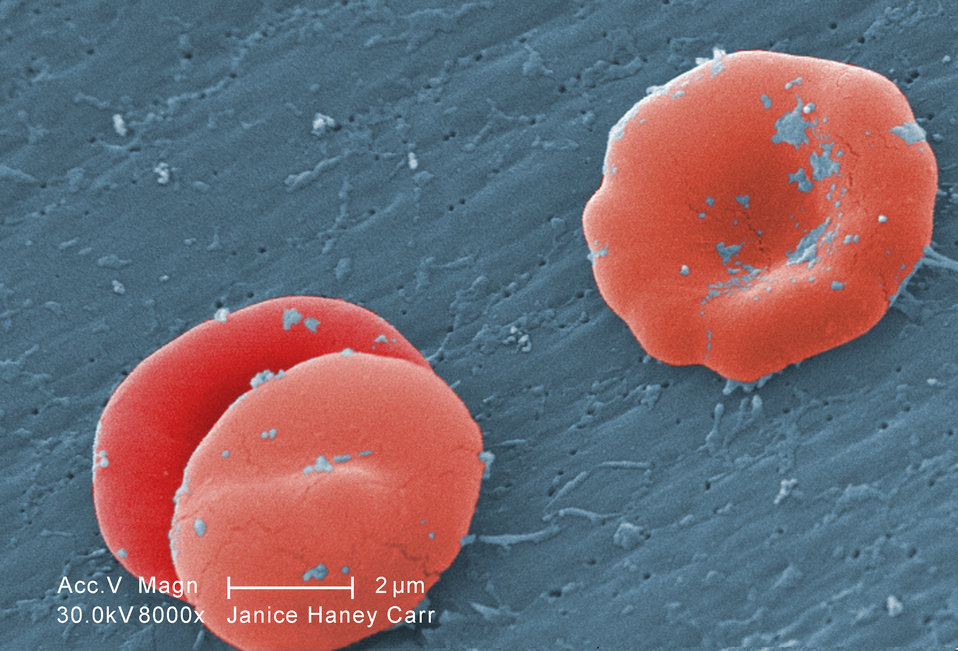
Under a high magnification of 8000X, this scanning electron micrograph (SEM) revealed some of the ultrastructural morphology displayed by red blood cells (RBCs) in a blood specimen of a 6 year old male patient that has sickle cell with hereditary persistence of fetal hemoglobin (S-HPFH). In these individuals, the presence of the persistent fetal hemoglogin reduces the severity of the consequences of the sickle cell disease, thereby, reducing the degree of cellular deformity, i.e., sickling, seen in the sickled cells.